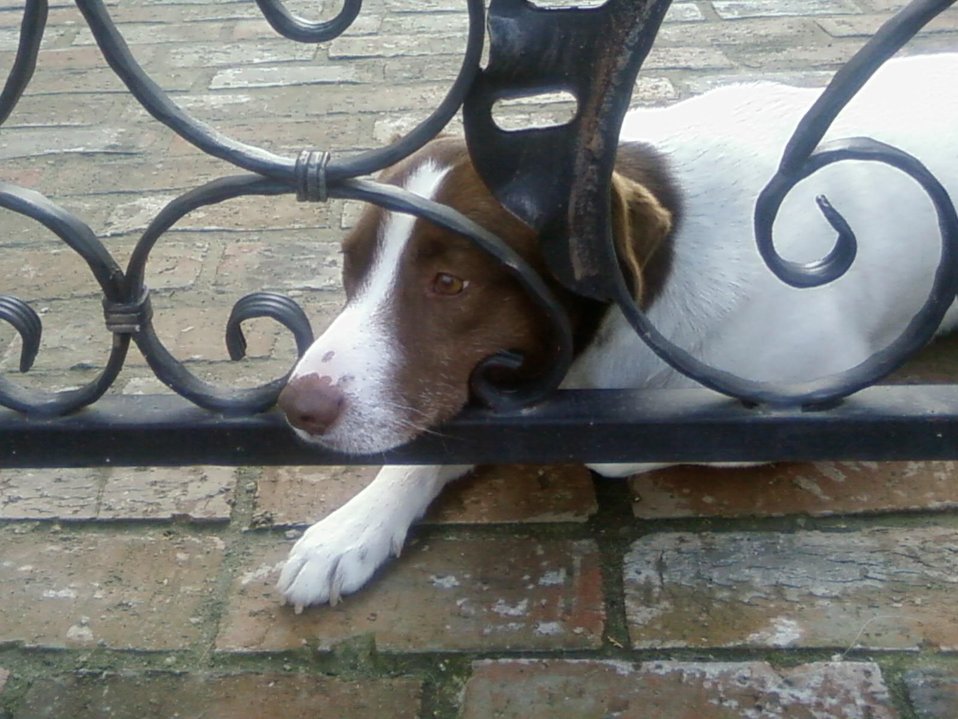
English:
Image title: Beautiful dog on bricks Image from Public domain images website, http://www.public-domain-image.com/full-image/fauna-animals-public-domain-images-pictures/dogs-public-domain-images-pictures/beautiful-dog-on-bricks.jpg.html